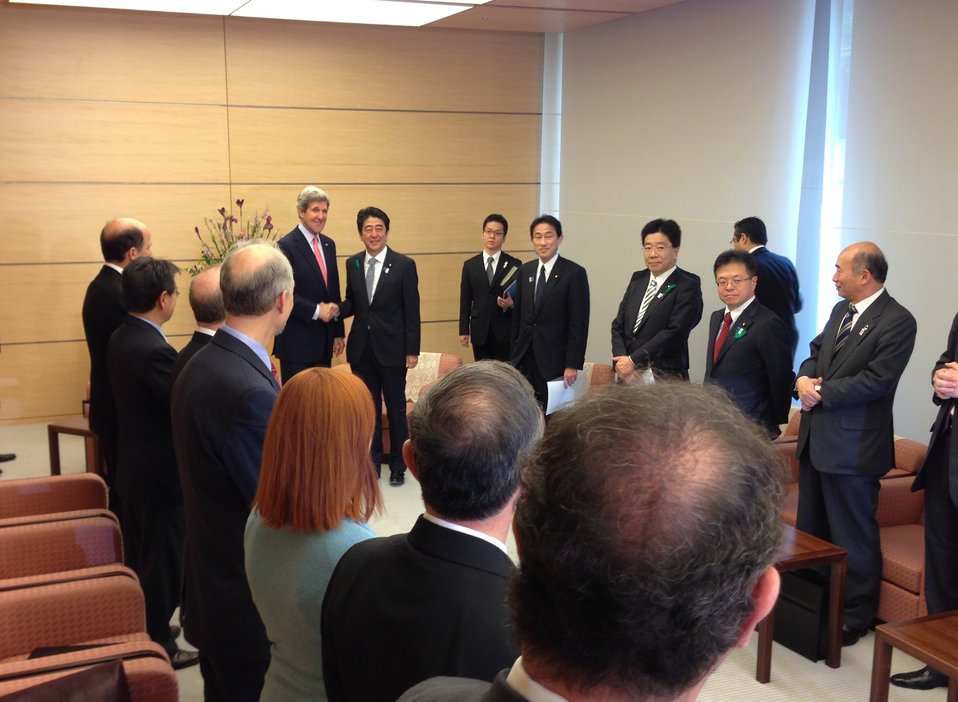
Secretary Kerry Meets With Japanese Prime Minister Abe

U.S. Secretary of State John Kerry meets with Japanese Prime Minister Shinzo Abein Tokyo, Japan, on April 15, 2013.